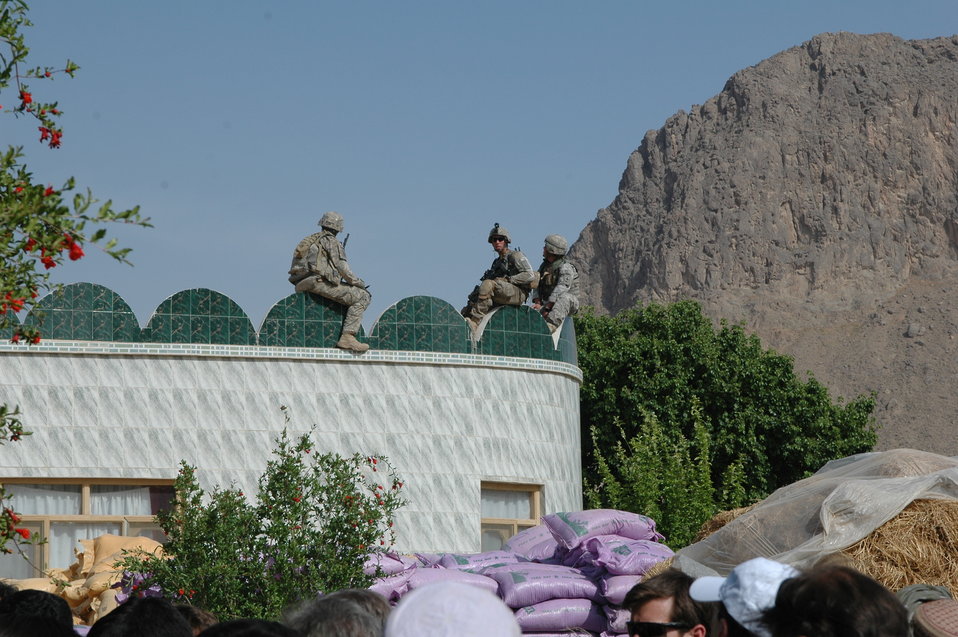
Dr Shah Visits Argandab April 10, 2010